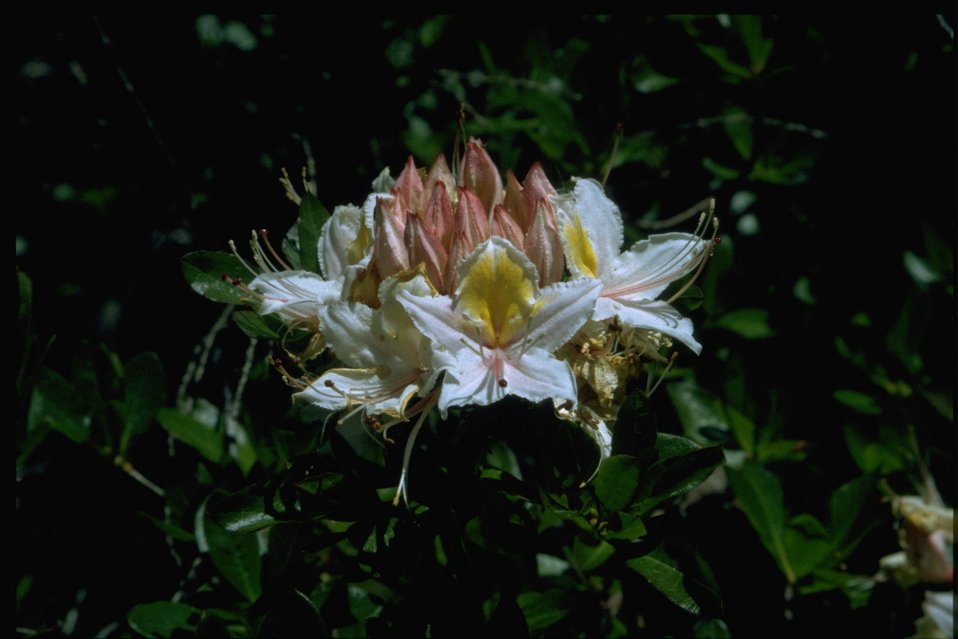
Closeup shot of Rhododendron occidentale.